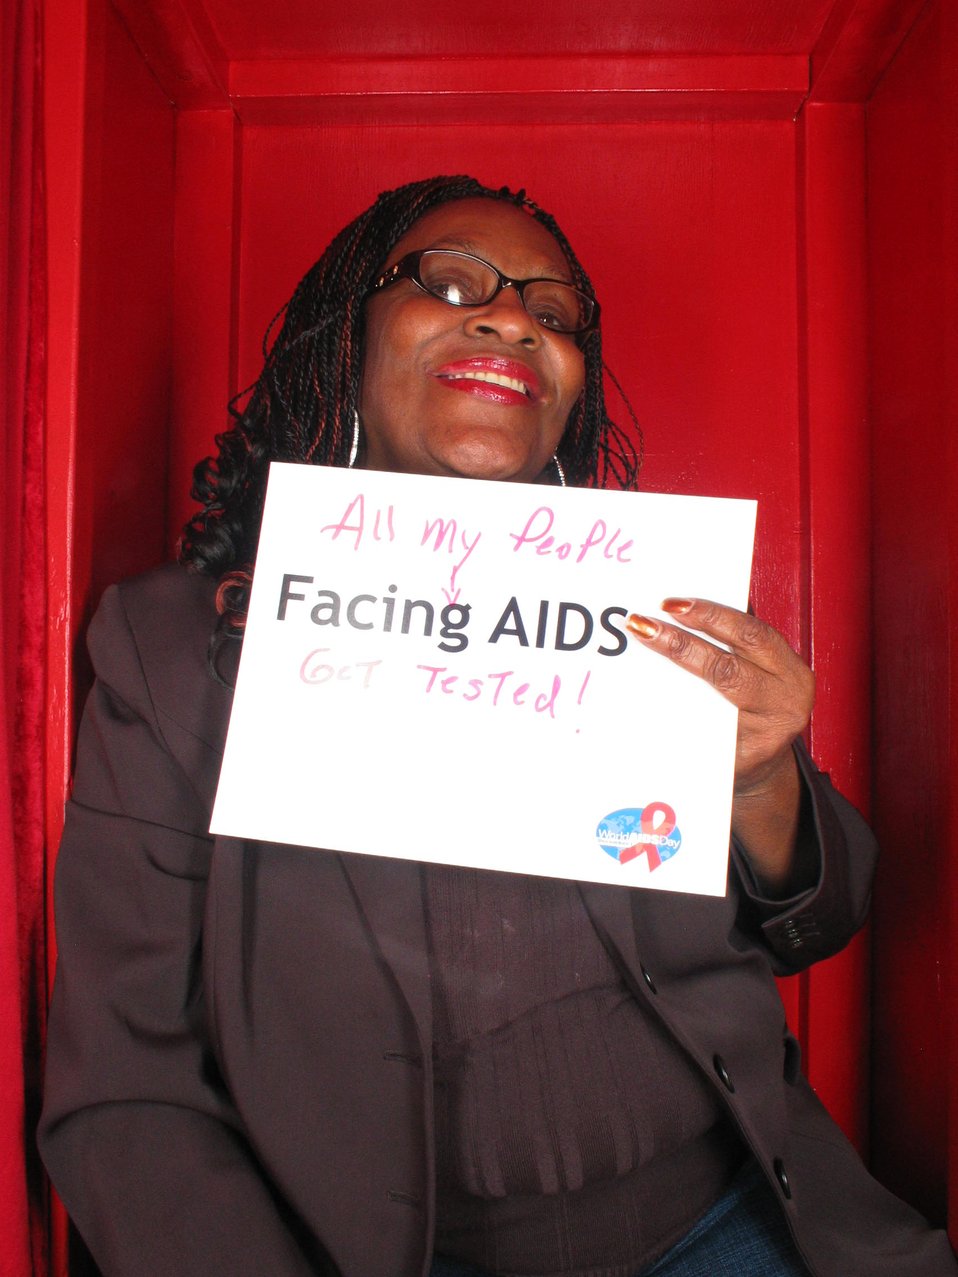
All my people Facing AIDS Get tested!